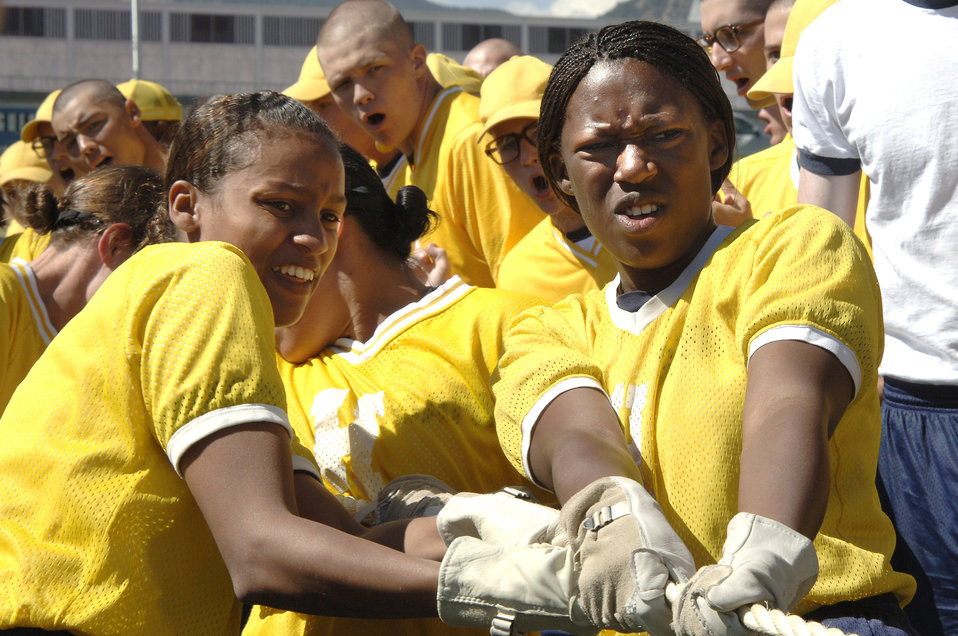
Cadets team up at field day

Basic cadet trainees strain during a tug-of-war contest at Field Day July 14 at the U.S. Air Force Academy in Colorado. New cadets are in their first month of training at the Academy and are learning honor, discipline and integrity in addition to physical fitness.